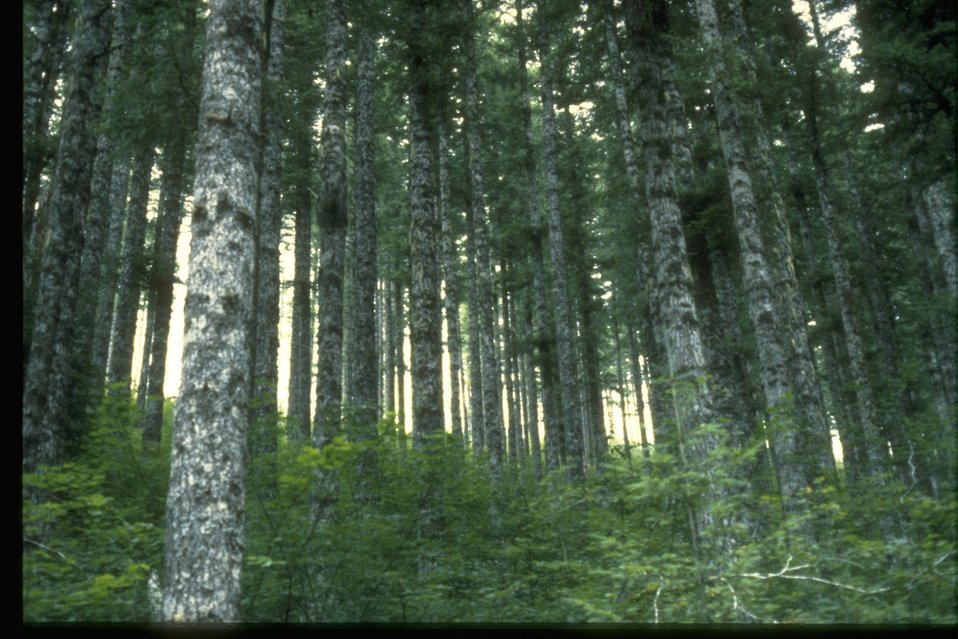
Forest Scene: Douglas Fir Stand.